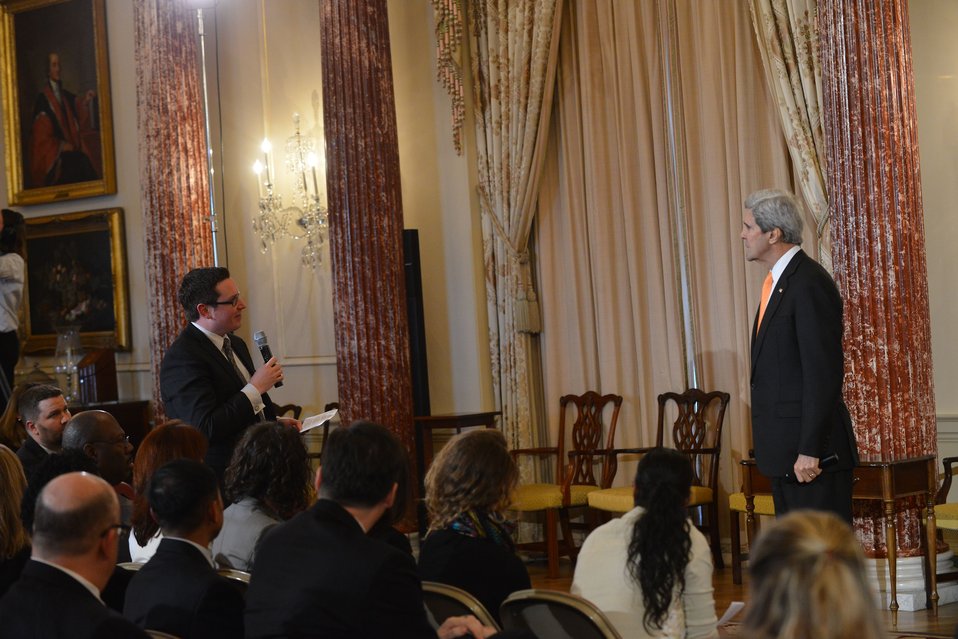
Secretary Kerry Listens to a Question From a State Department Employee

U.S. Secretary of State John Kerry holds a conversation with employees at the U.S. Department of State in Washington, D.C., on January 29, 2014.